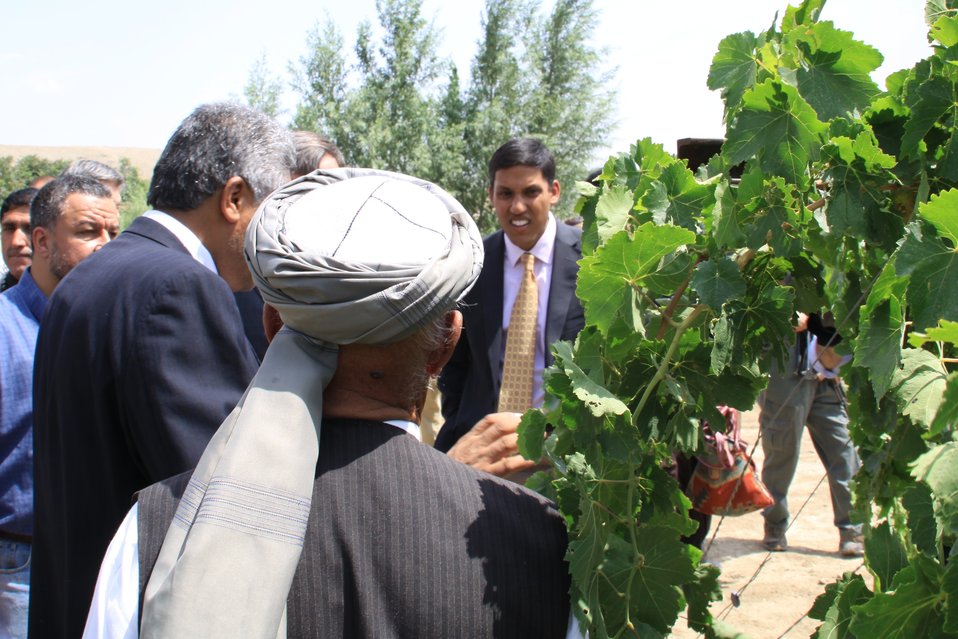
Badam Bagh Farm